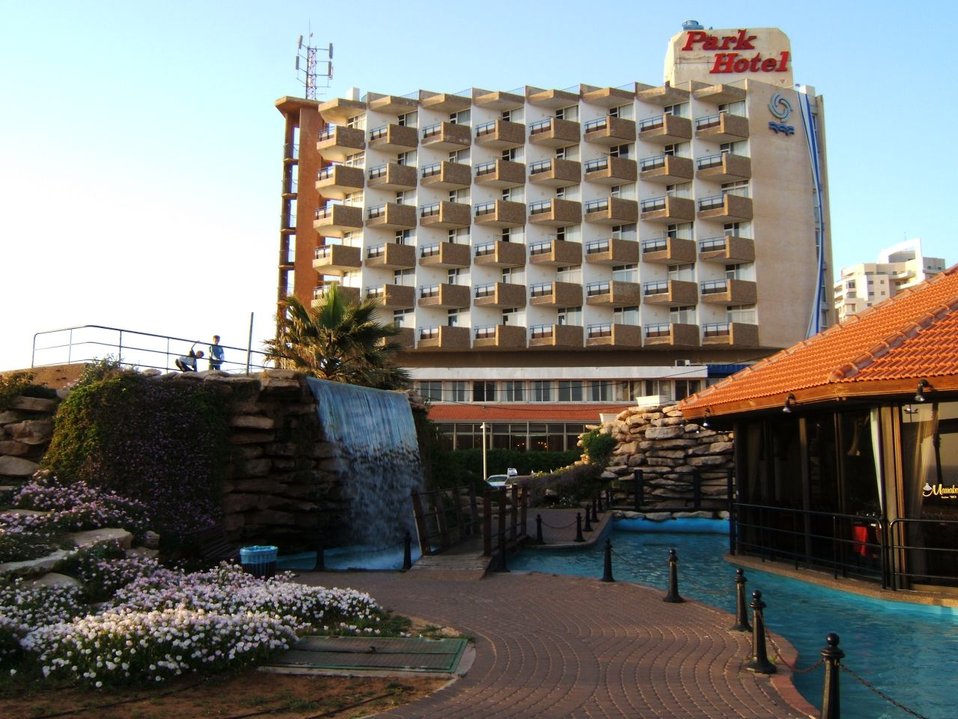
Русский: 'Парк Отель'.Один из многочисленных отелей Натании Français†: 'Park Hôtel'. L'un des nombreux hôtels de Netanya